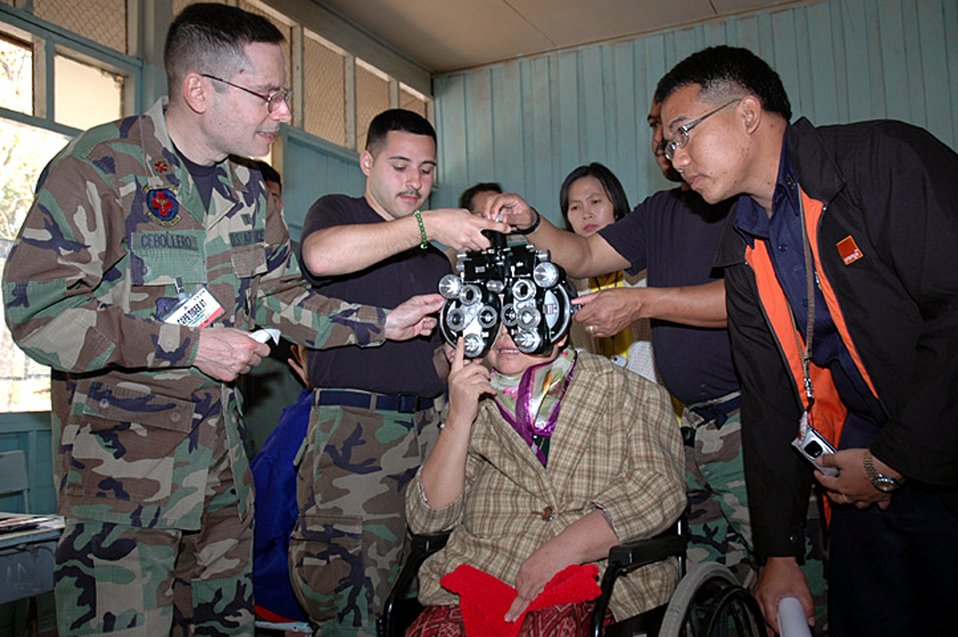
Cope Tiger participants provide humanitarian assistance

Maj. Carlos Cebollero adjusts the settings for the sharpest vision during an examination of a wheelchair-bound patient as Senior Airman David Hernandez and Tech. Sgt. Edward Hill hold the vision testing equipment in place as an interpreter listens closely Jan. 30 in Korat, Thailand. Airman Hernandez and Major Cebollero are assigned to the 374th Aeromedical Dental Squadron at Yokota Air Base, Japan, and Sergeant Hill is from the 18th Aeromedical Dental Squadron at Kadena AB, Japan. Military members from the United States, Thailand and Republic of Singapore took part in a humanitarian mission at the school as part of Exercise Cope Tiger 2007.